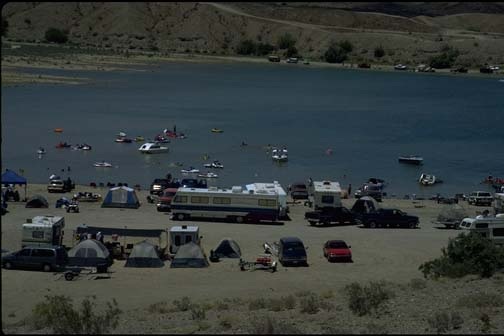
Busy summer weekend at Senator Wash Recreation Area.